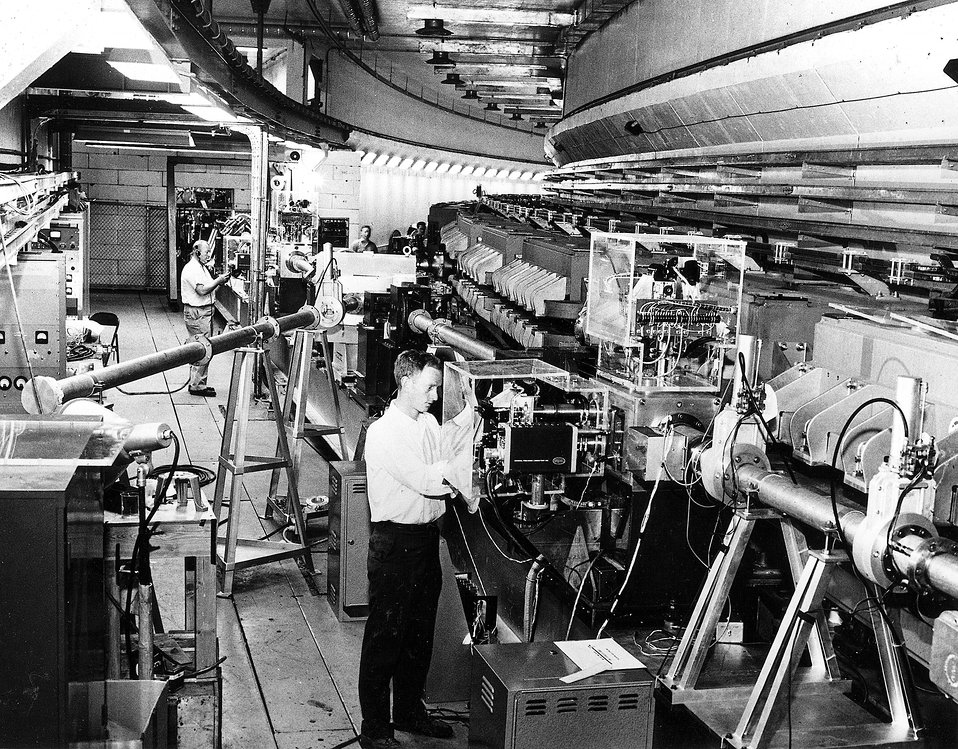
Alternating Gradient Synchrotron at Brookhaven National Laboratory. The pipe extending across the aisle (to left) is the exit pipe for an analyzer magnet which bends the protron beam through 25 degrees to determine the energy spread of the protons. In the foreground is a viewing box with Lucite covers over the drive mechanisms. c. 1961